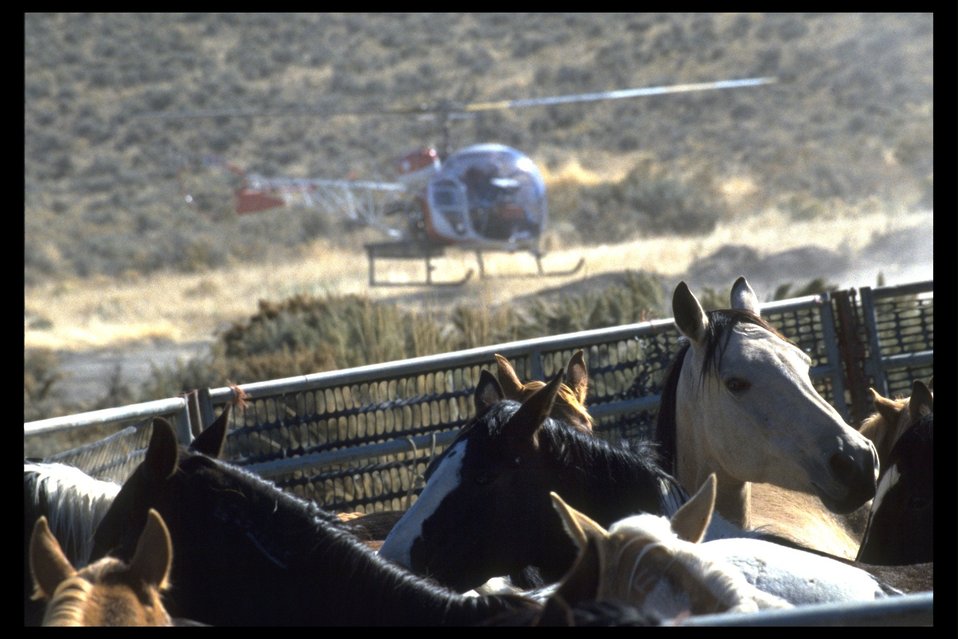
South Steens wild horses at a trap in the Burns District.